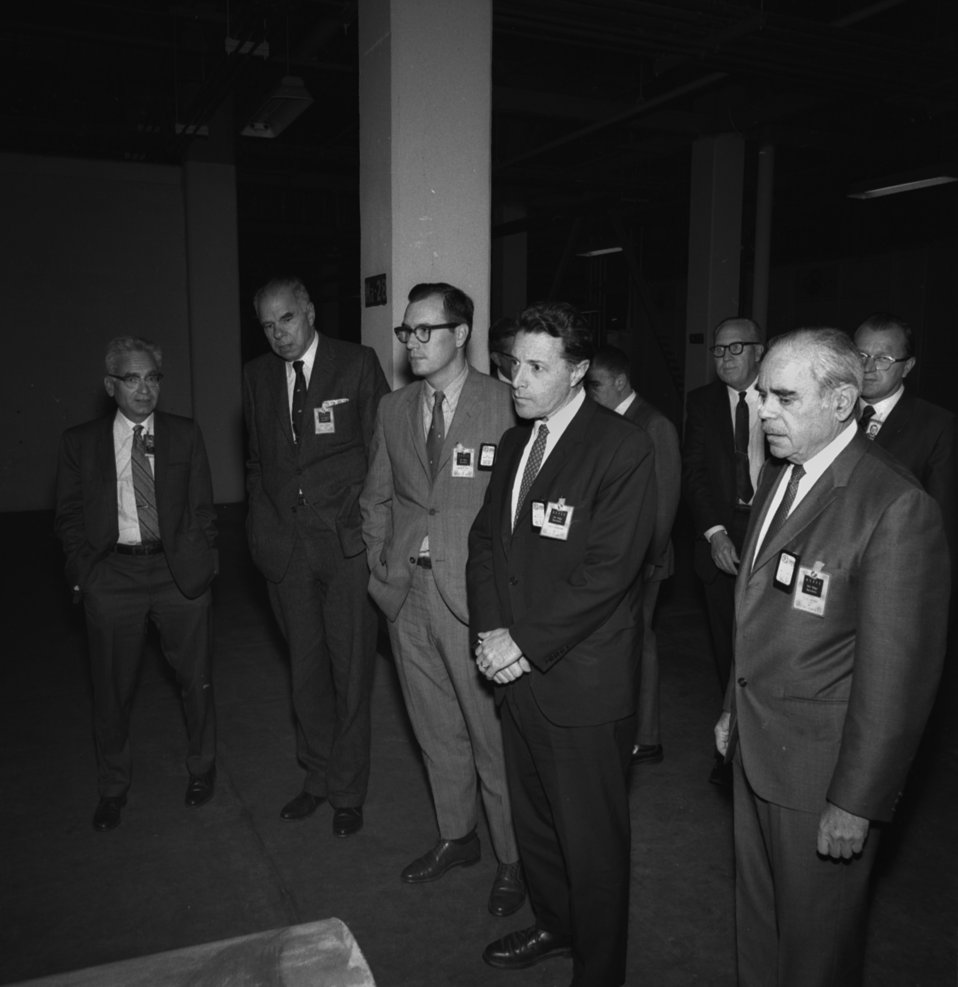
Caspar Weinberger Visit to ORGDP

70-337a DOE photo by Frank Hoffman
Caspar Weinberger Visit to Oak Ridge Gaseous Diffusion Plant Oak Ridge Tennessee 10-23-1970